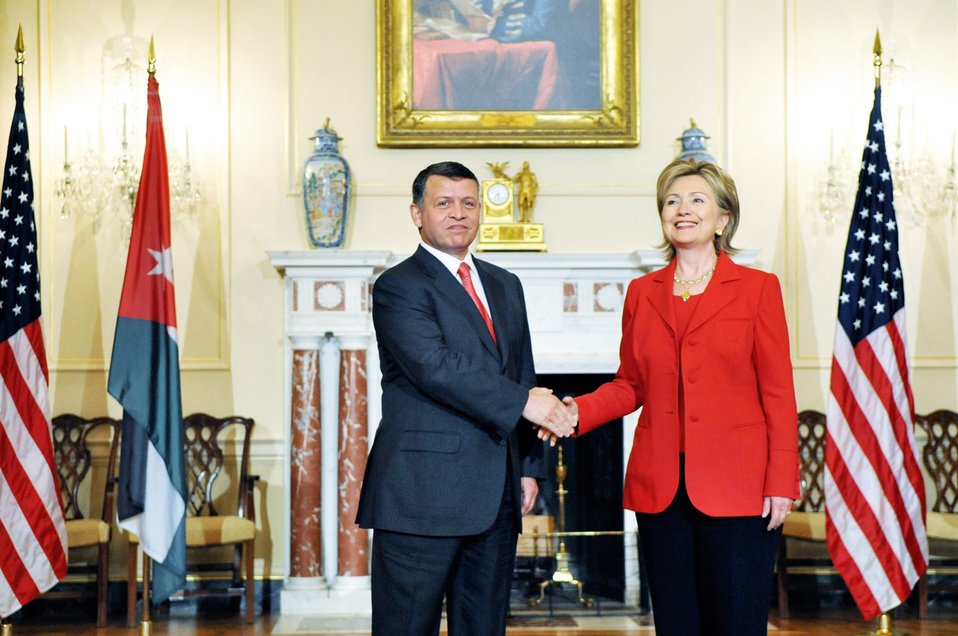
Secretary Clinton Meets With King of Jordan

U.S. Secretary of State Hillary Rodham Clinton meets with King Abdullah II of Jordan at the U.S. Department of State in Washington, DC April 21, 2009.